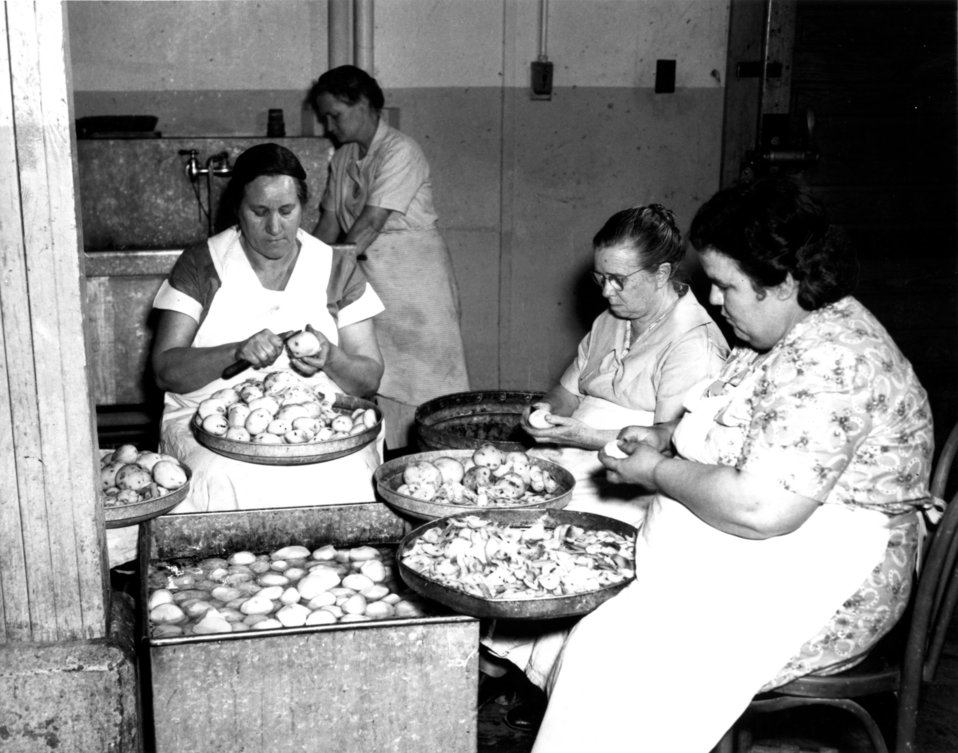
Daily Life at Oak Ridge